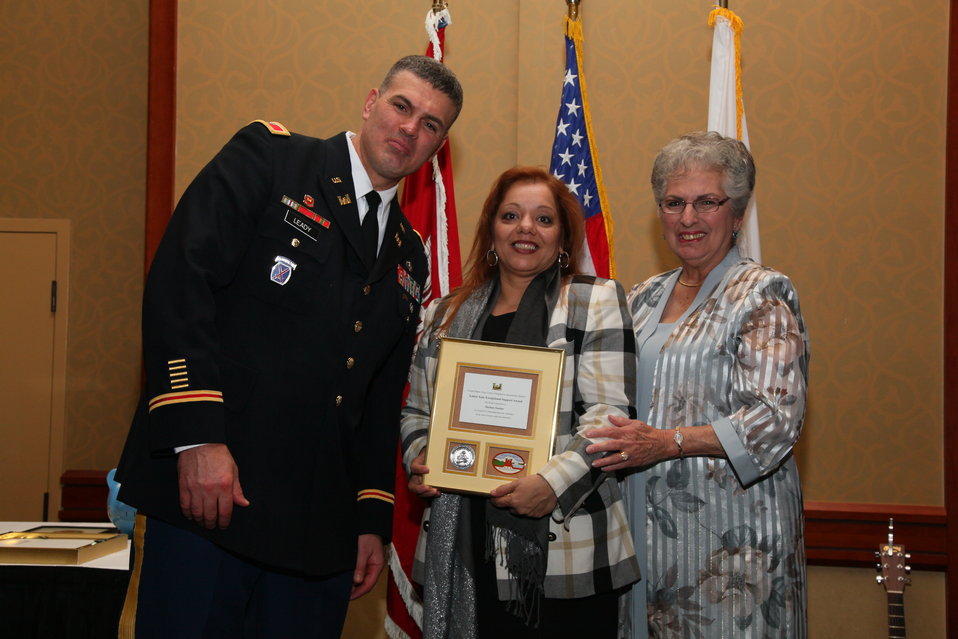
Sacramento District Holiday Party 2011